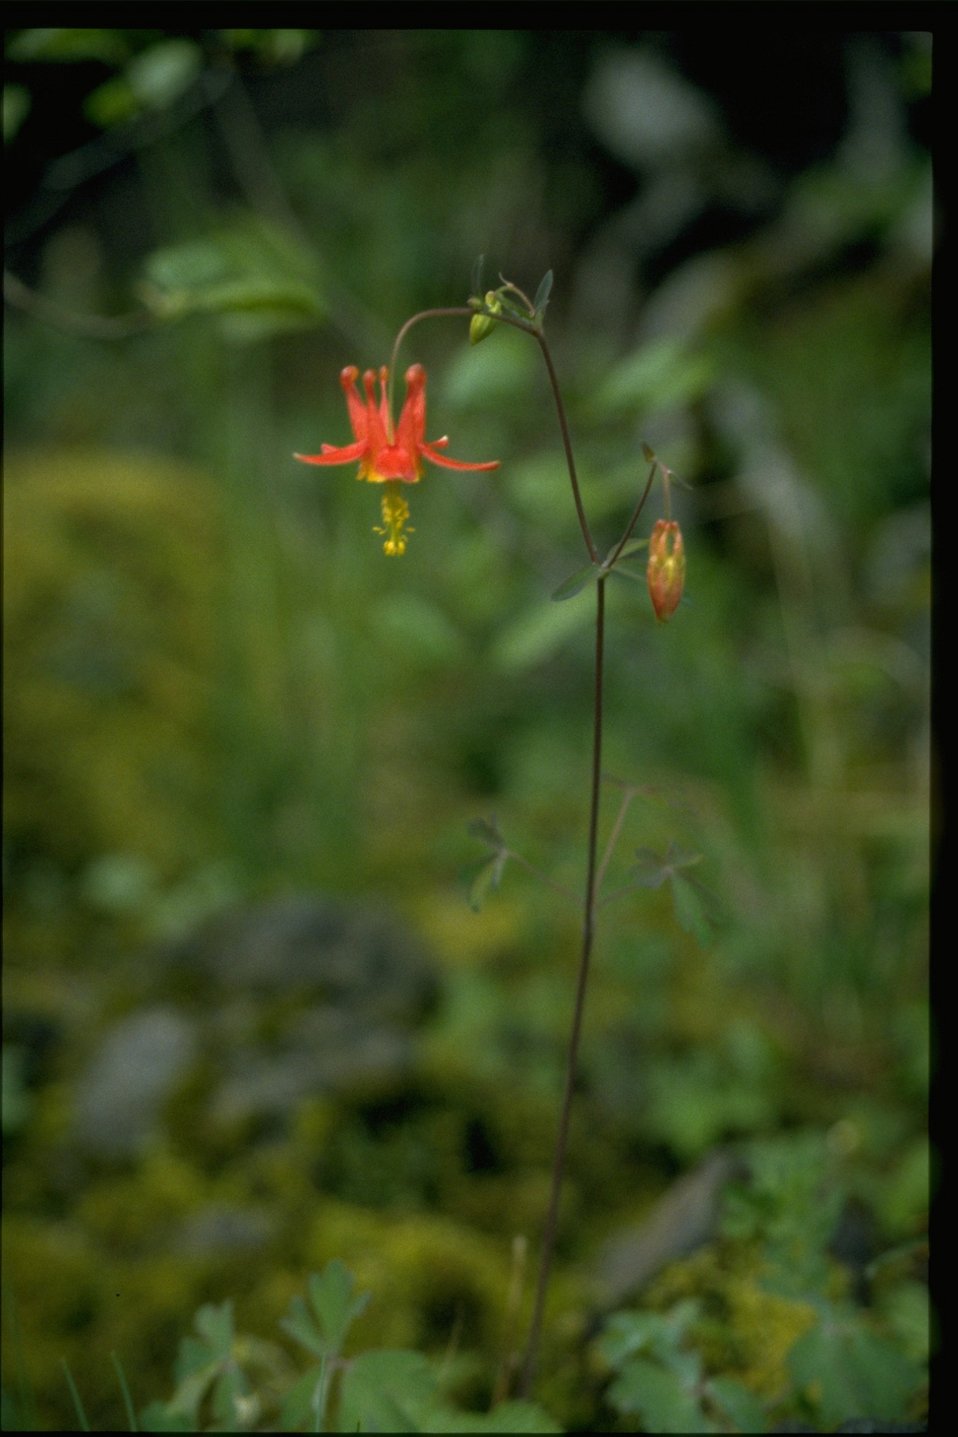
Farshot of Aquillegia formosa.